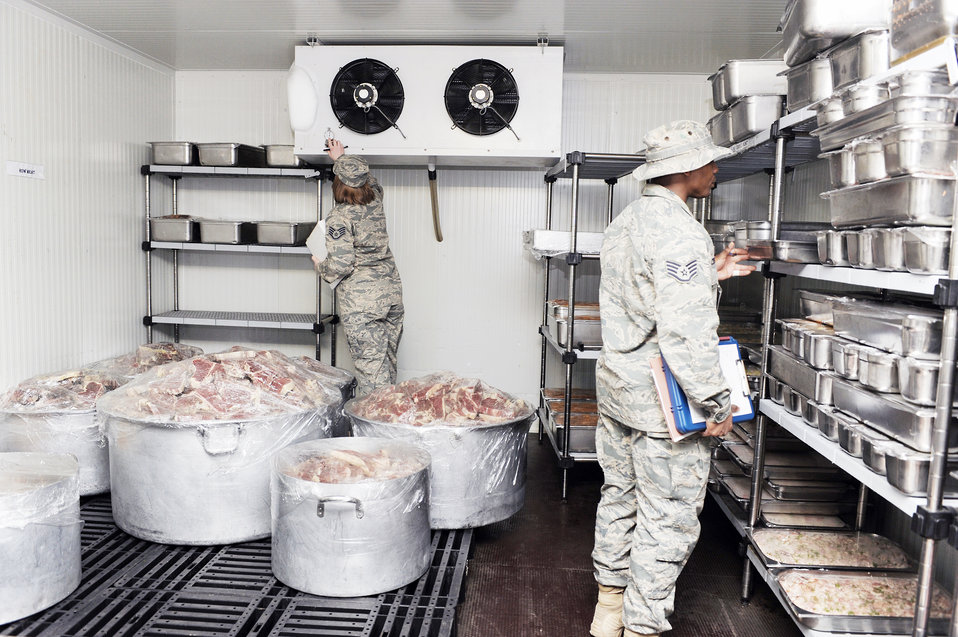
Airmen keep servicemembers healthy through preventative measures

Staff Sgts. Jennifer Ledward (left) and William Crenshaw check the temperature, dates and storage of the